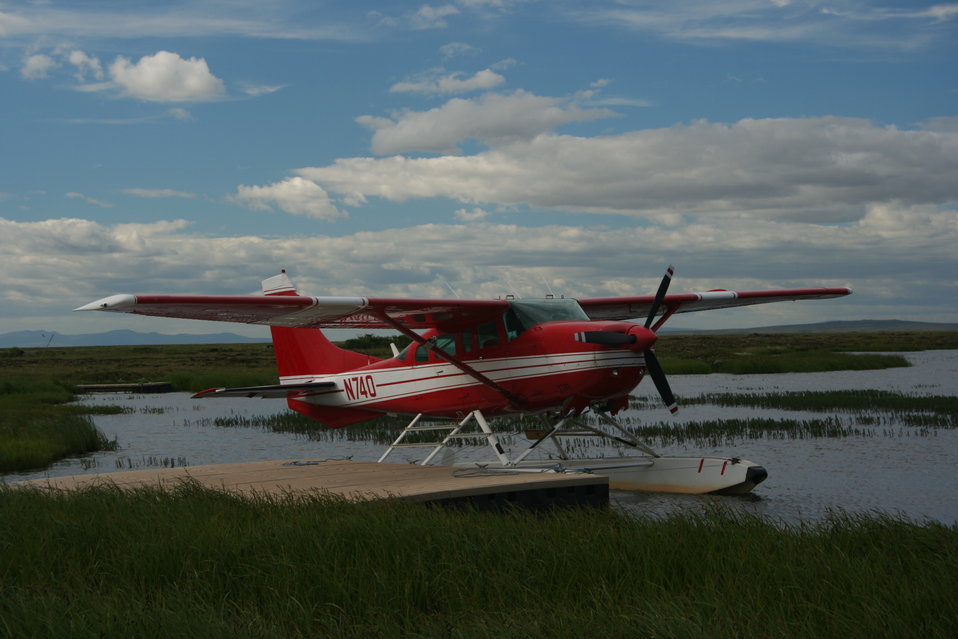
Float Plane

Float planes are a major form of transportation and can be a huge asset in some of the banding projects on Yukon Delta NWR.

USFWS Yukon Delta NWR